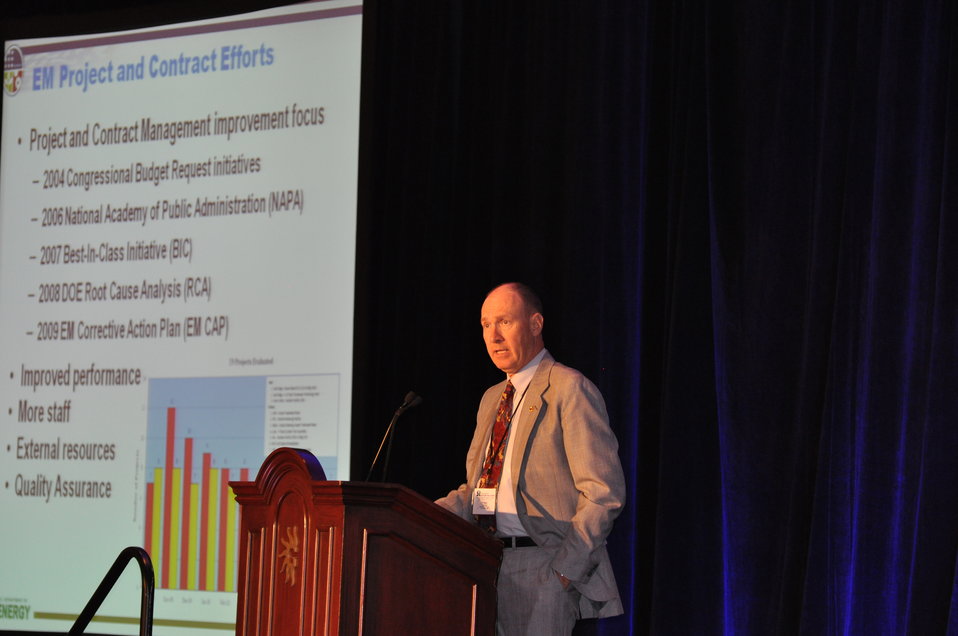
Success in Recovery Act Shows ‘Good Alignment’ with GAO Criteria

Federal Project Director Frazer Lockhart discusses qualities that have made the Recovery Act Program successful at the Information Exchange.

EM’s Recovery Act Program has a committed leadership, extensive transparency, and a strong link to EM’s mission to close sites and reduce the footprint of the Cold War-era legacy, Federal Project Director Frazer Lockhart explained at the Information Exchange.